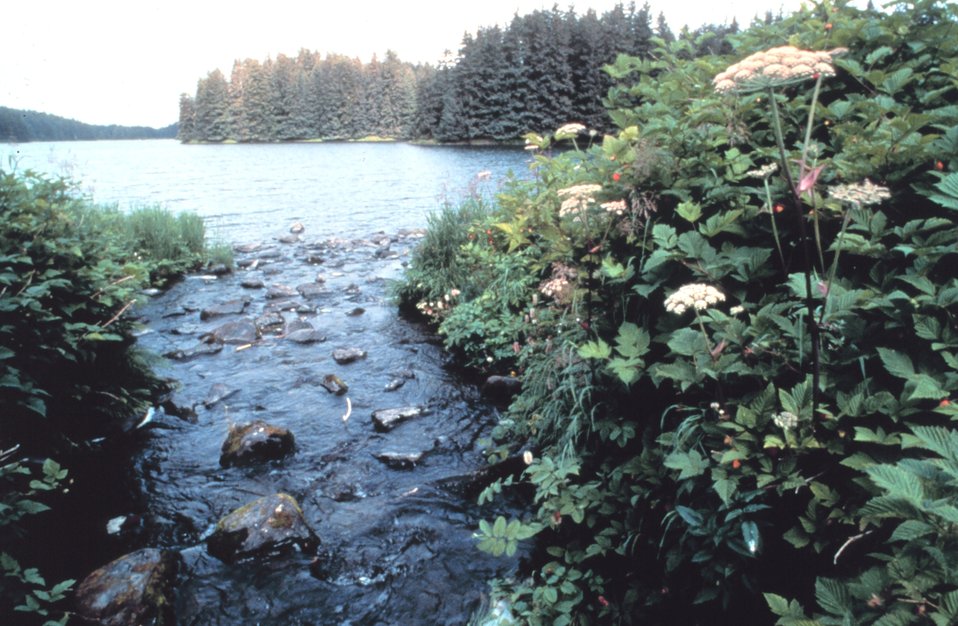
A small stream emptying to an arm of the sea